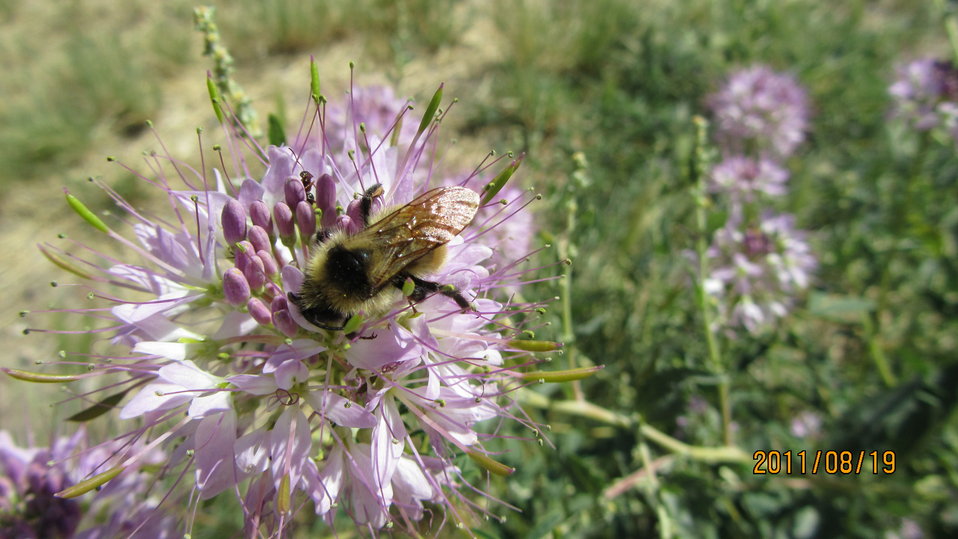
Pink bee plant with a bee pollunating it! (Cleamo serrulata)